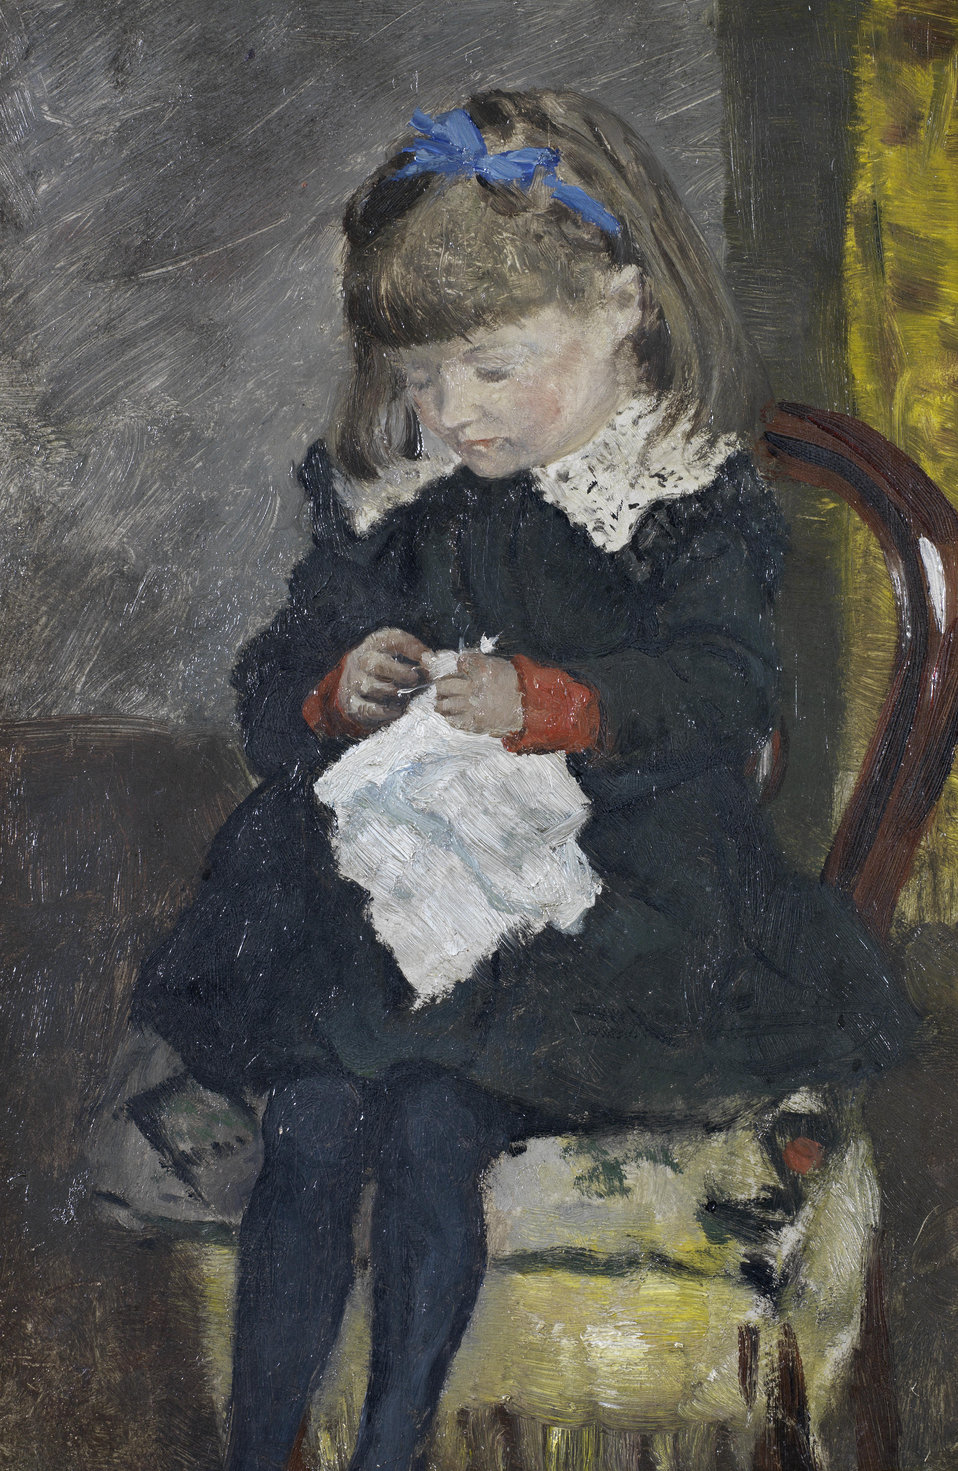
Portrait of Emma Bogaerts. Oil on panel. 32 x 23.5 cm